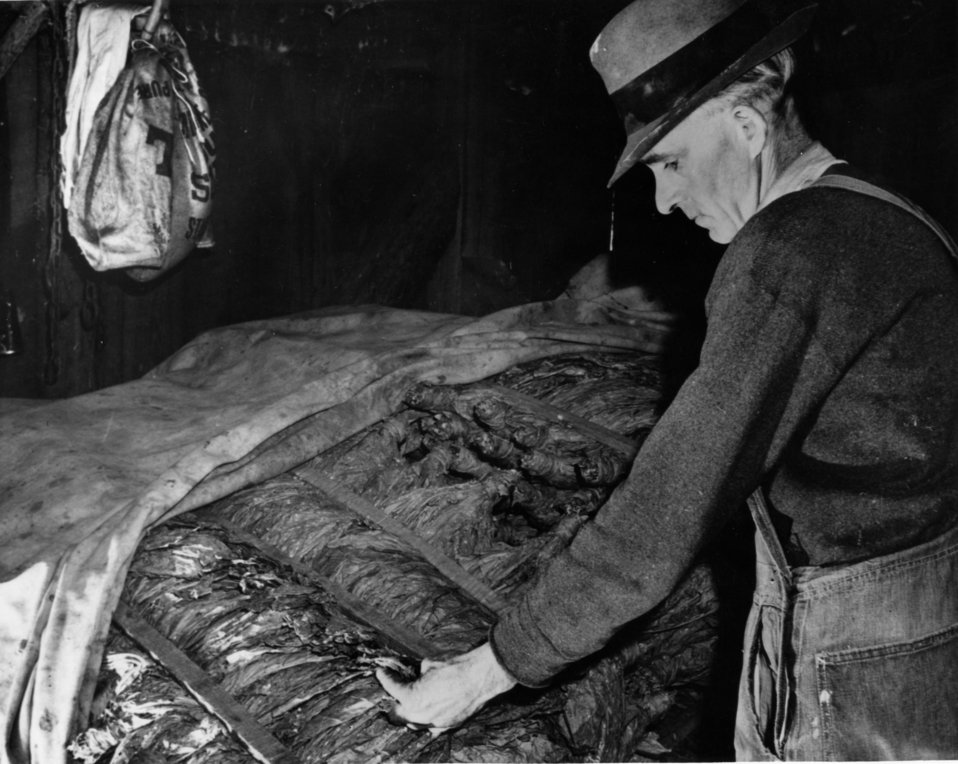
Early settlers at Oak Ridge